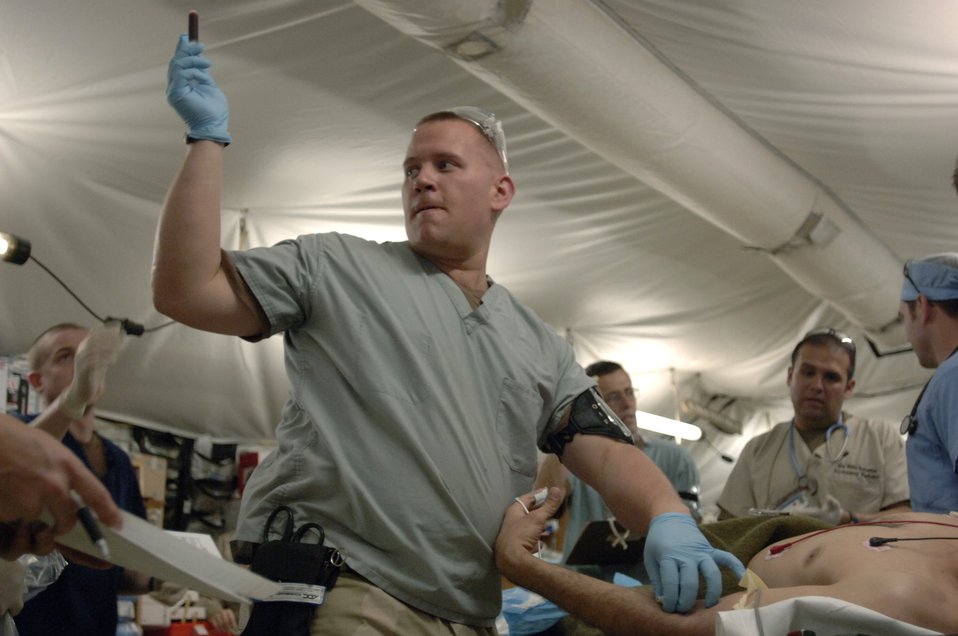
A hospital for heroes

Staff Sgt. Donovan O'Linc passes a liter of drawn blood to a nurse at the Air Force Theater Hospital. Sergeant O'Linc is an aerospace medical technician assigned to the 332nd Expeditionary Medical Group at Balad Air Base, Iraq. Sergeant O'Linc's days are filled with this type of rapid treatment at Balad's medical facility.